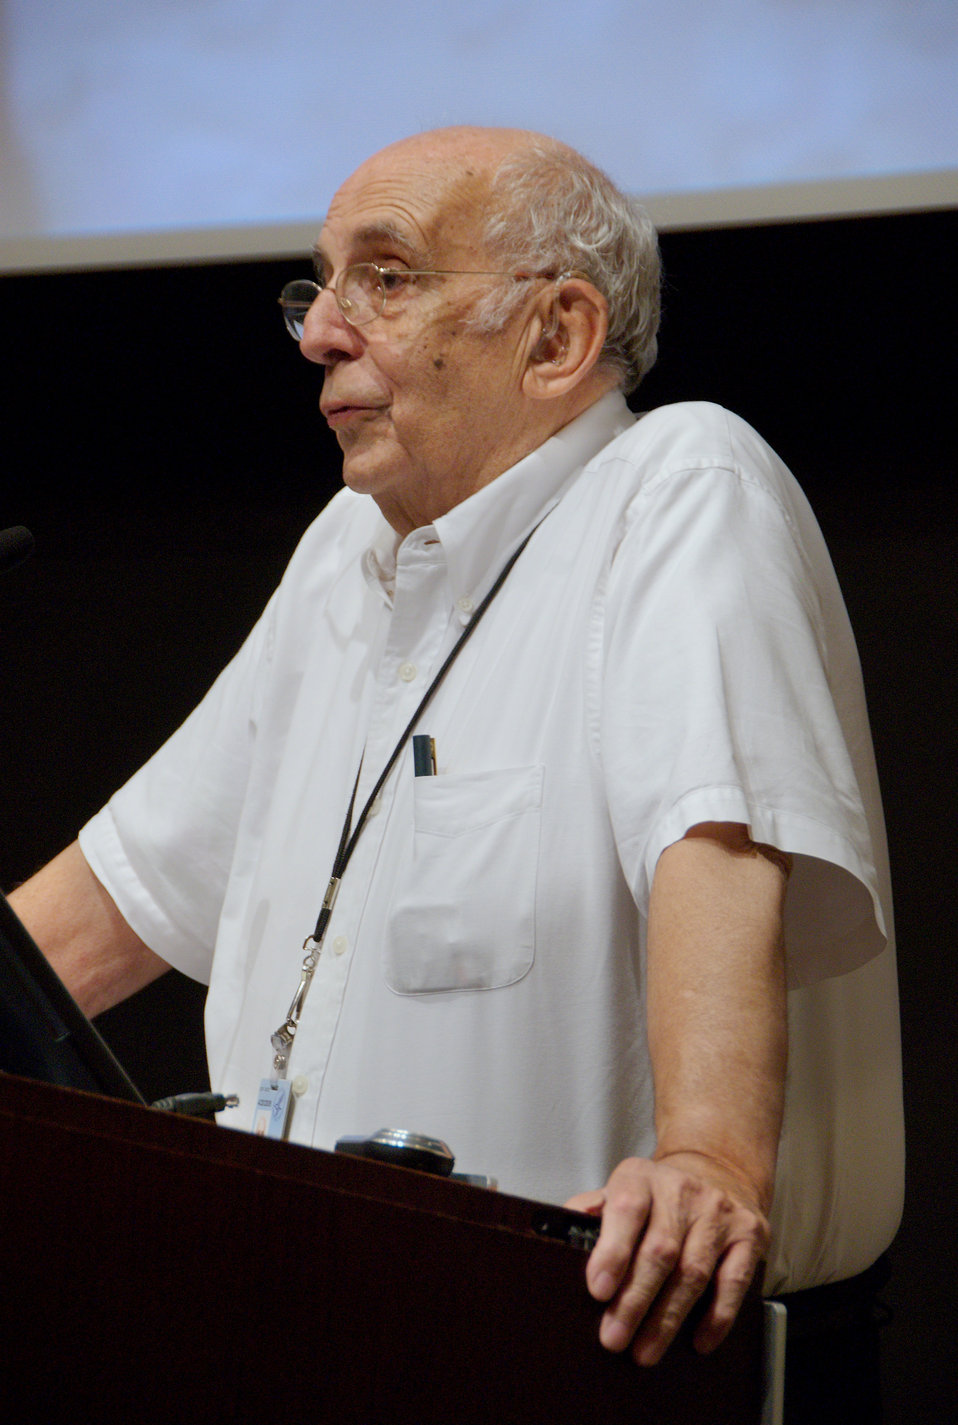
In this 2008 photograph depicted former Centers for Disease Control Director, Dr. David J. Sencer at a podium, as he was speaking during a CDC Smallpox Reunion, held in Atlanta, Georgia. It was during Dr. Sencer's watch that bold efforts to fight smallpox on a global scale, lead to its official Worldwide eradication in 1980.